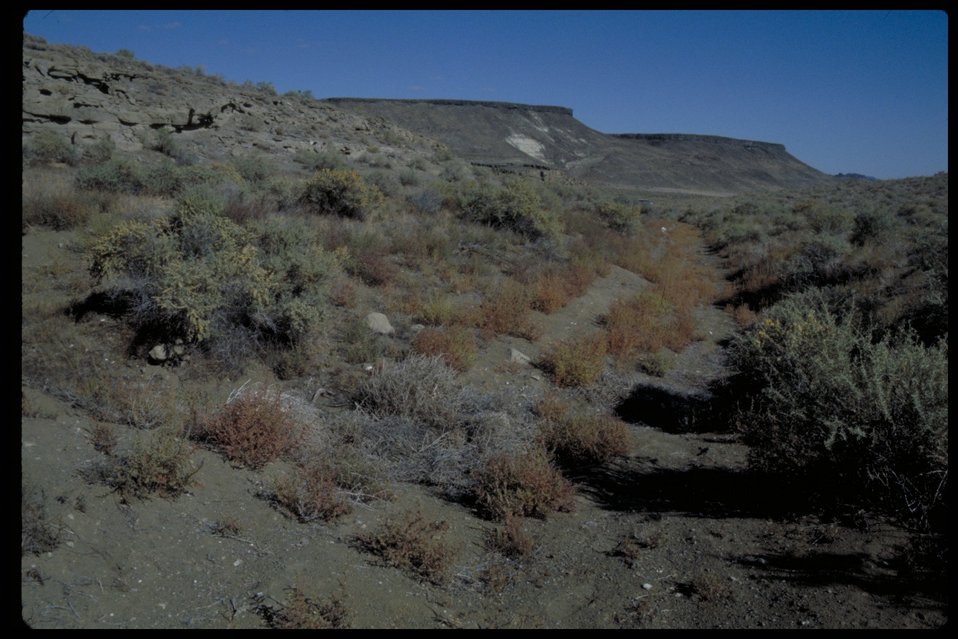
Oregon Trail near Wildhorse Butte Lower Snake River District